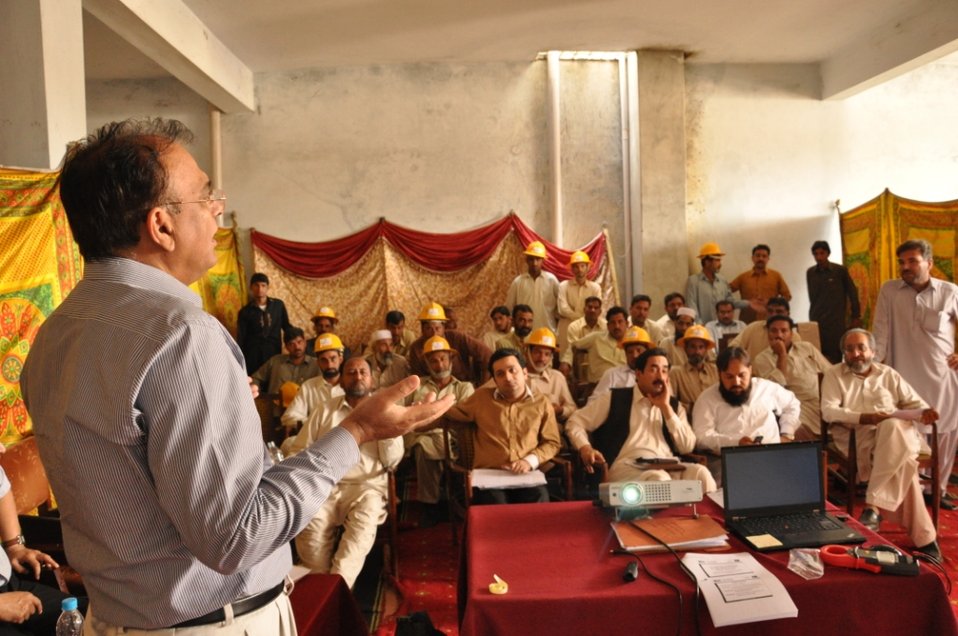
Usaid To Provide Technical Assistance To Improve Efficiency Of Tube-Wells In Iesco By Installing 2600 Lt Capacitors at Islamabad on April 26, 2012